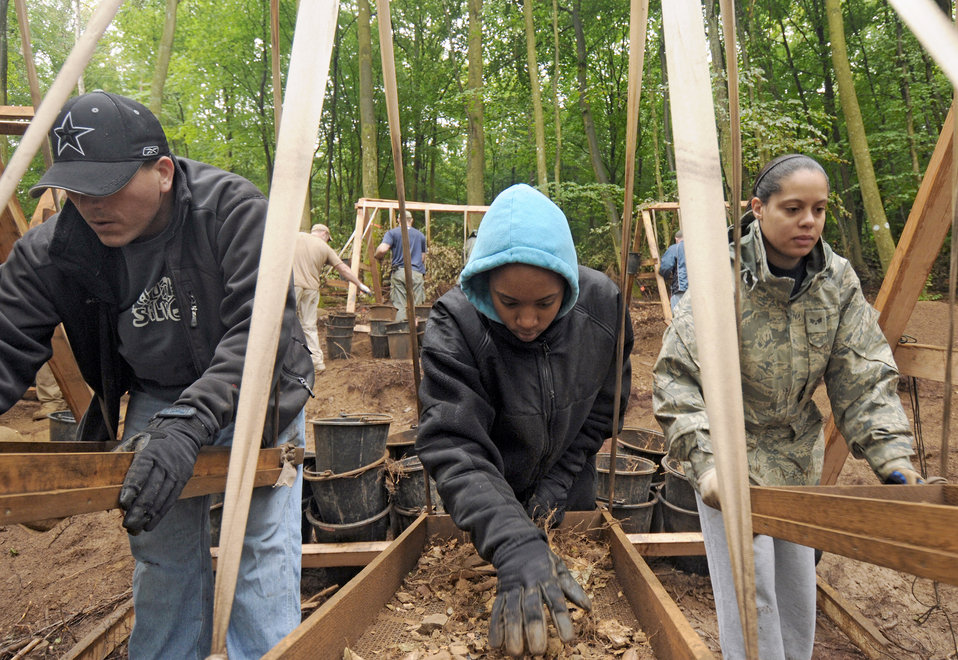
Joint team searches for fallen Airmen in local German forest

Master Sgt. Austin Lewis (left to right), Senior Airman Candice Anderson and Senior Airman Emmannuelle Canty sift through dirt while volunteering for a Joint Prisoners of War/Missing in Action Accounting Command mission July 28, 2010, in Rheinland-Pfalz, Germany. Volunteers from the Spangdahlem community assisted JPAC on their mission to recover wreckage from an aircraft that crashed on a local logging trail during World War II. Sergeant Lewis is assigned to the 726th Air Mobility Squadron. Airmen Anderson and Canty are from the 52nd Force Support Squadron.